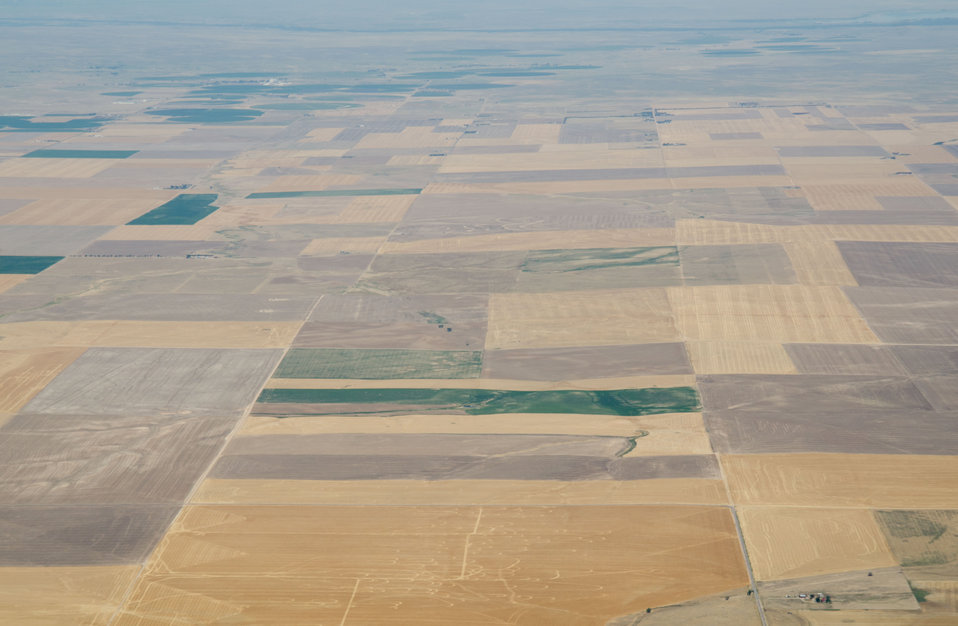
Aerial views of drought affected Colorado farm lands, 83 miles east of Denver, Colorado on Saturday, July 21, 2012. Green areas are irrigated, the yellow areas are dryland wheat crops.